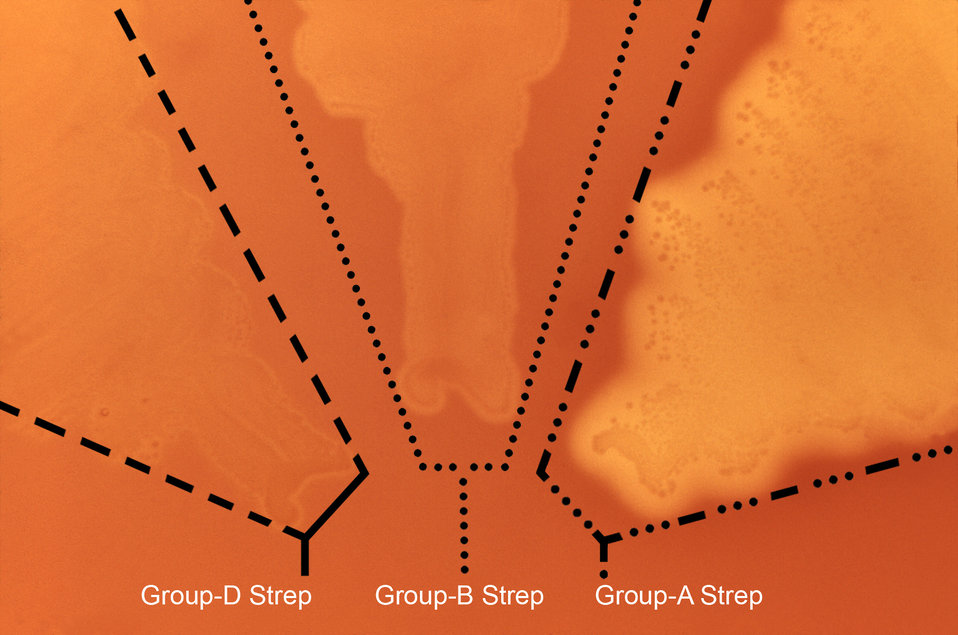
Under a magnification of approximately 10X, this image depicts the quantitative difference in hemolytic reactivity seen in a trypticase soy agar culture plate containing 5% sheep's blood growing group-D Streptococci (left wedge), group-B Streptococci (middle wedge), and group-A Streptococci (right wedge) bacteria. This plate was grown under normal atmospheric conditions, at 35oC, for a periof of 18hrs. See PHIL 10861 for another, non-magnified view of this culture plate.